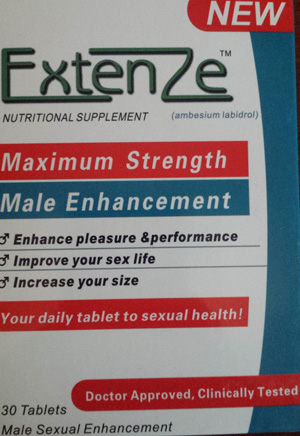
RECALLED – Dietary Supplement for Sexual Enhancement

January 9, 2014 – Product Recall – Midwest Wholesale Issues Voluntary Recall of Boost Ultra, XZone Gold, Sexy Monkey, Triple MiracleZen Platinum, Magic for Men, 'New' Extenze, and New XZen Platinum Marketed as a Dietary Supplements Due to the Presence of Undeclared Drug Ingredients.